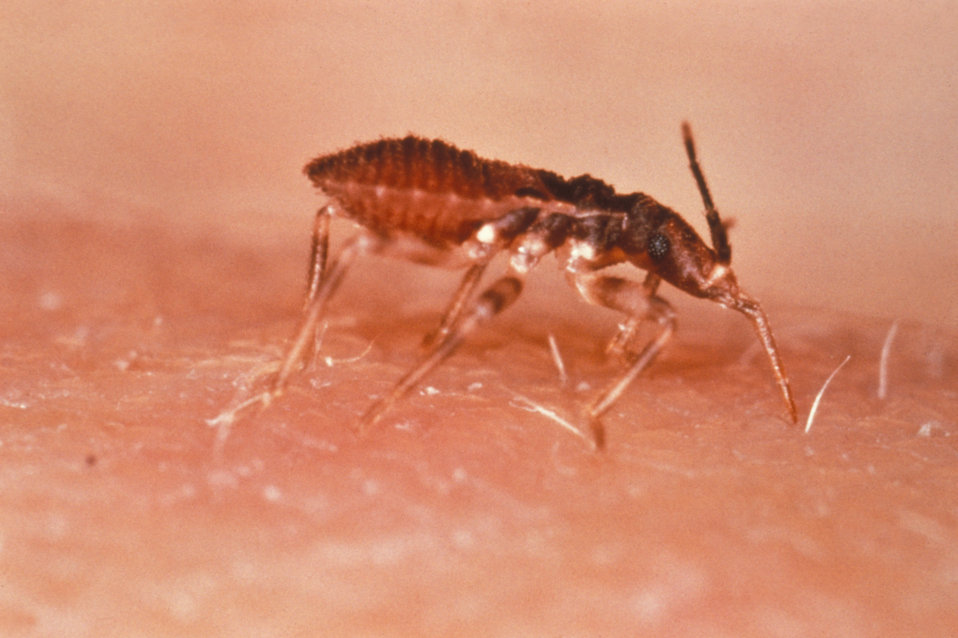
Triatoma infestans or the 'Kissing Bug', 'Assassin Bug', or 'Cone-Nose Bug', is a vector for Chagas' Disease.